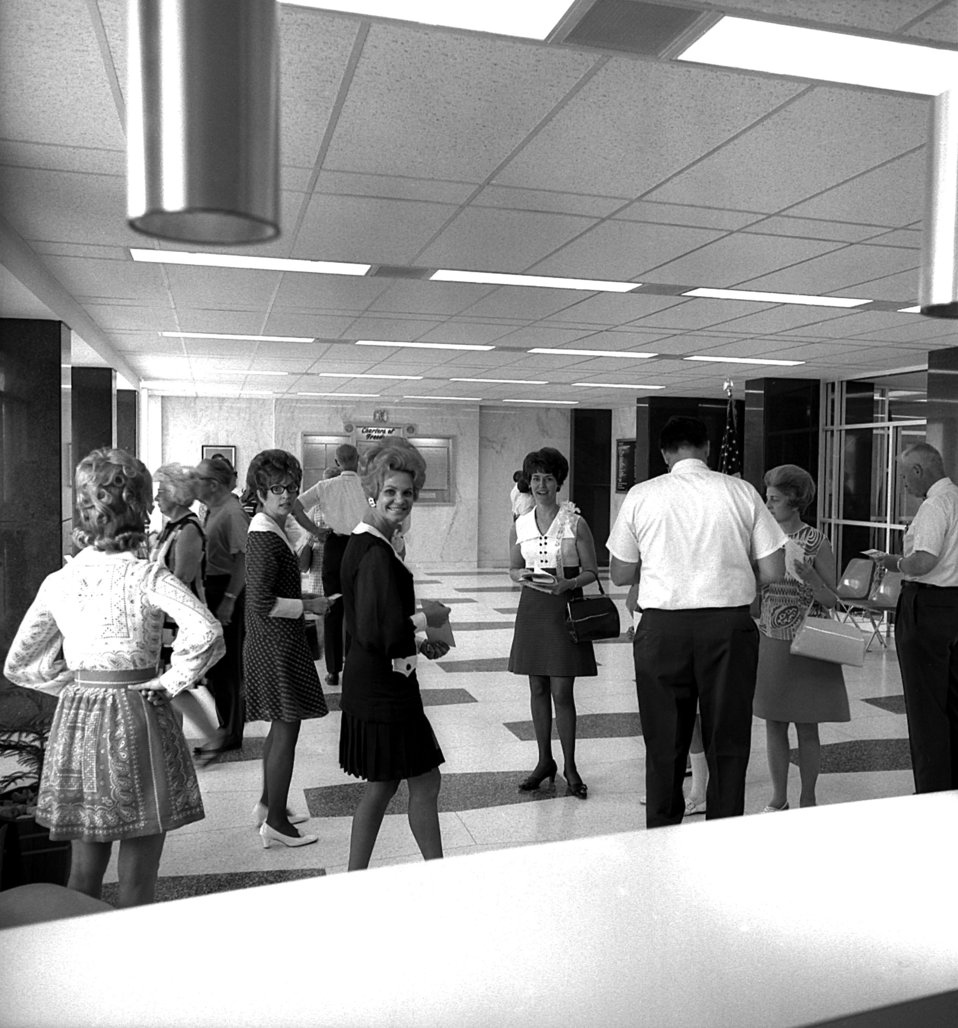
70-172c DOE Photo by Frank Hoffman
Formal Dedication New AEC (Atomic Energy Commision) - FOB (Federal Office Building) Oak Ridge Tennessee 6-27-1970